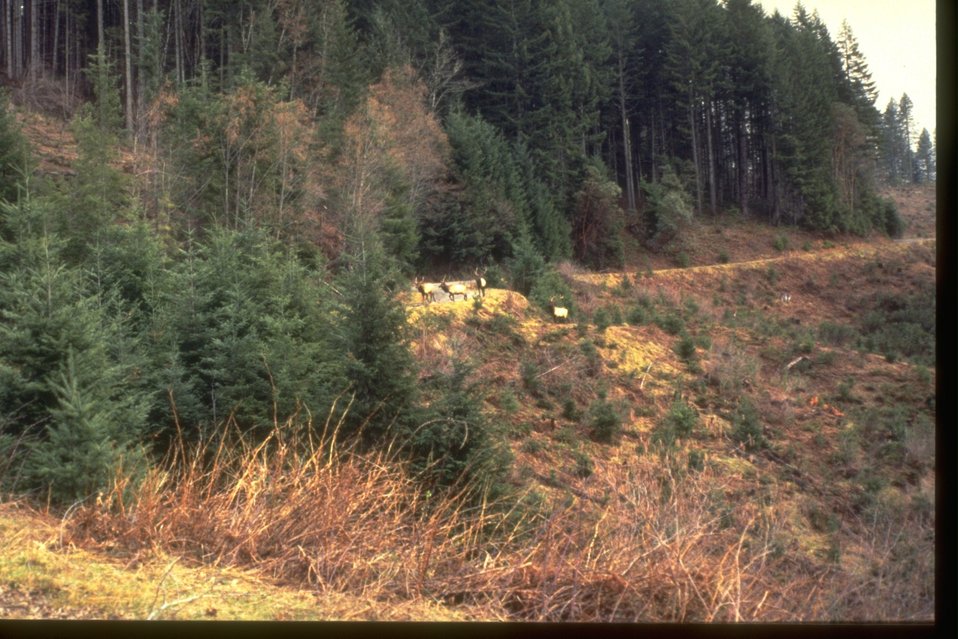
Herd of Elk crossing road ahead.